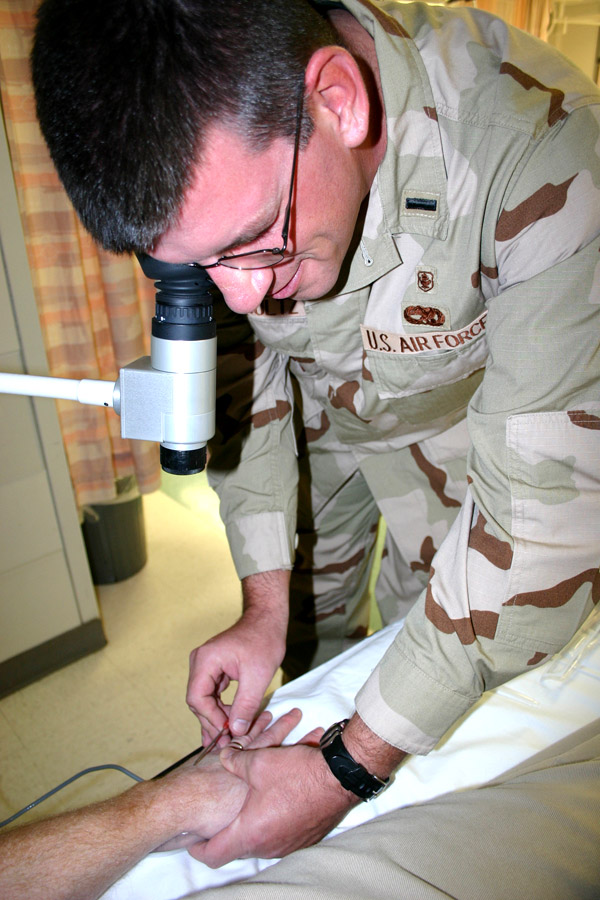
Illuminating view

LACKLAND AIR FORCE BASE, Texas (AFPN) -- 1st Lt. Keith Schultz uses an infrared light source to illuminate a patient's hand. The light, placed under a patient's hand, allows medical personnel to see the veins using a monoscope with night vision technology. Lieutenant Schultz is an emergency department nurse with the 59th Medical Wing here.